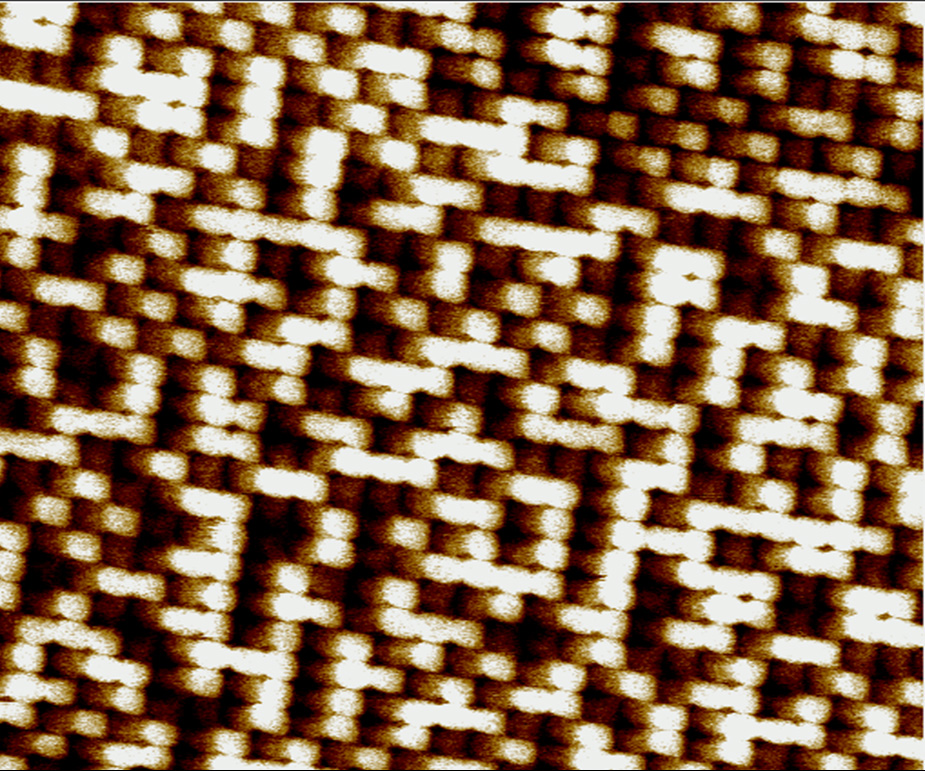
Nanodots; data storage

False-color image of 50-nanometer cobalt-palladium nanodots made with a magnetic force microscope provides both topographic and magnetic profiles. The darker dots are magnetized in the up direction (representing 1 in binary code) and the lighter dots are pointing down (representing 0).